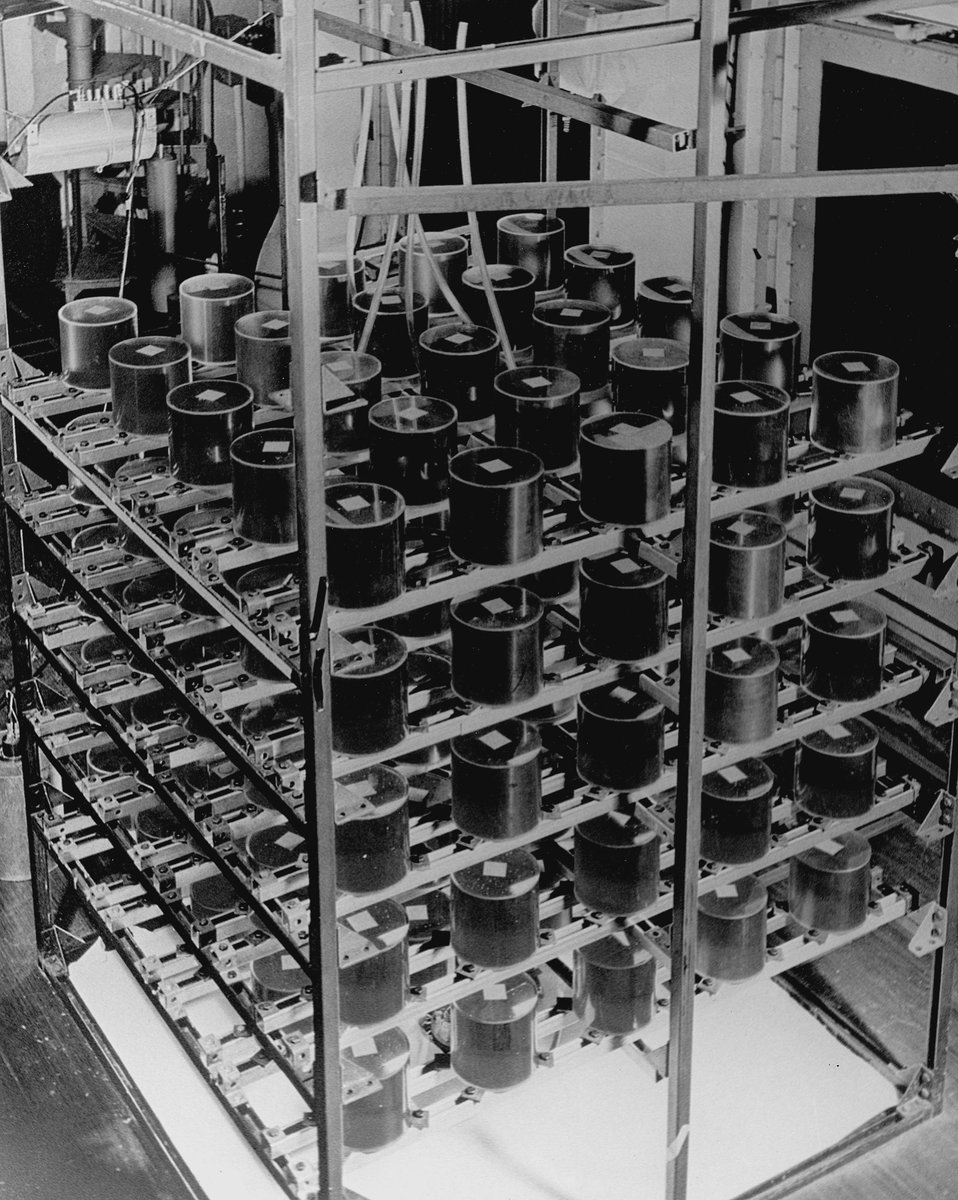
A critical array of plastic cylinders containing uranium highly enriched in uranium-235 was used in a study of the neutron interaction between subcritical units. c. 1973